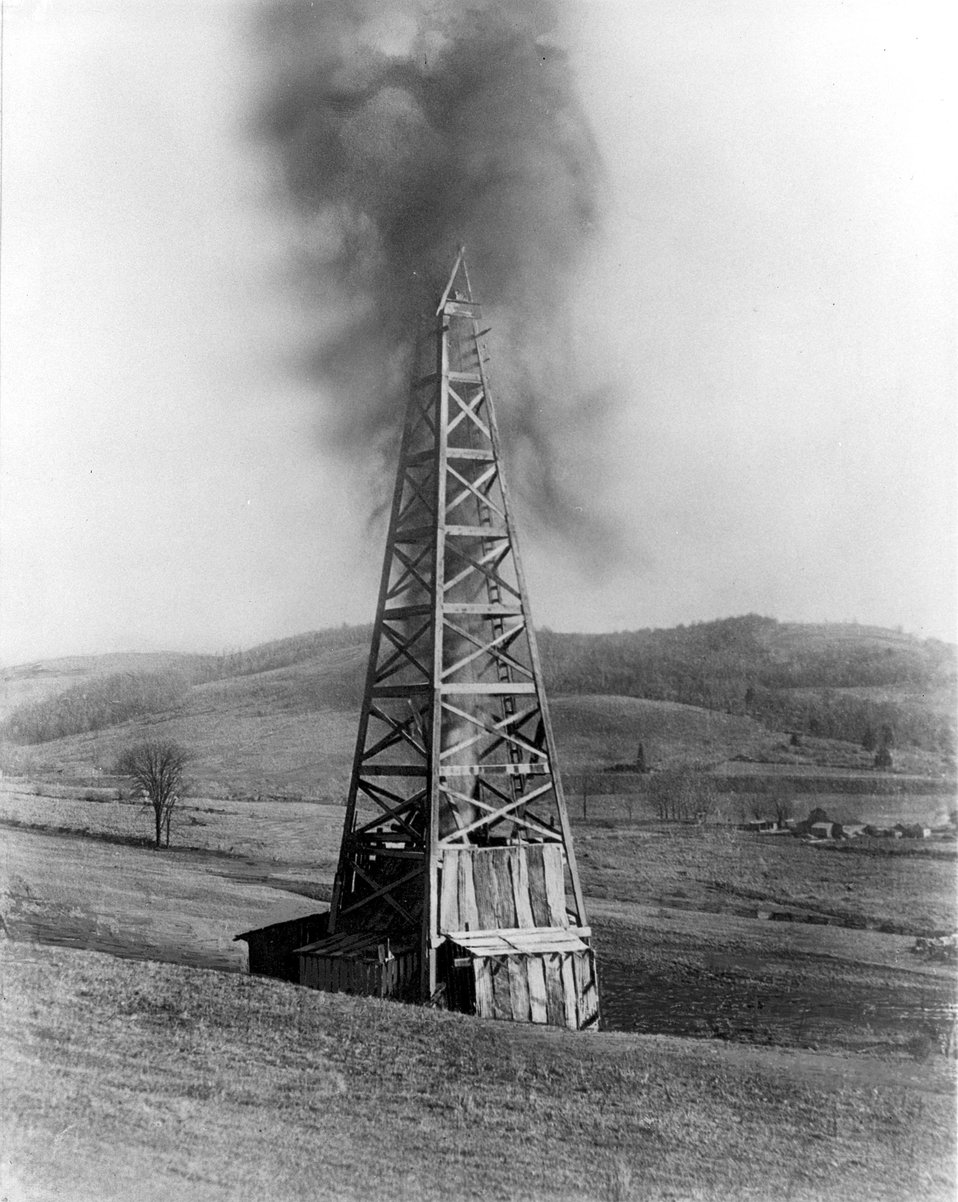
Gusher. c. undated